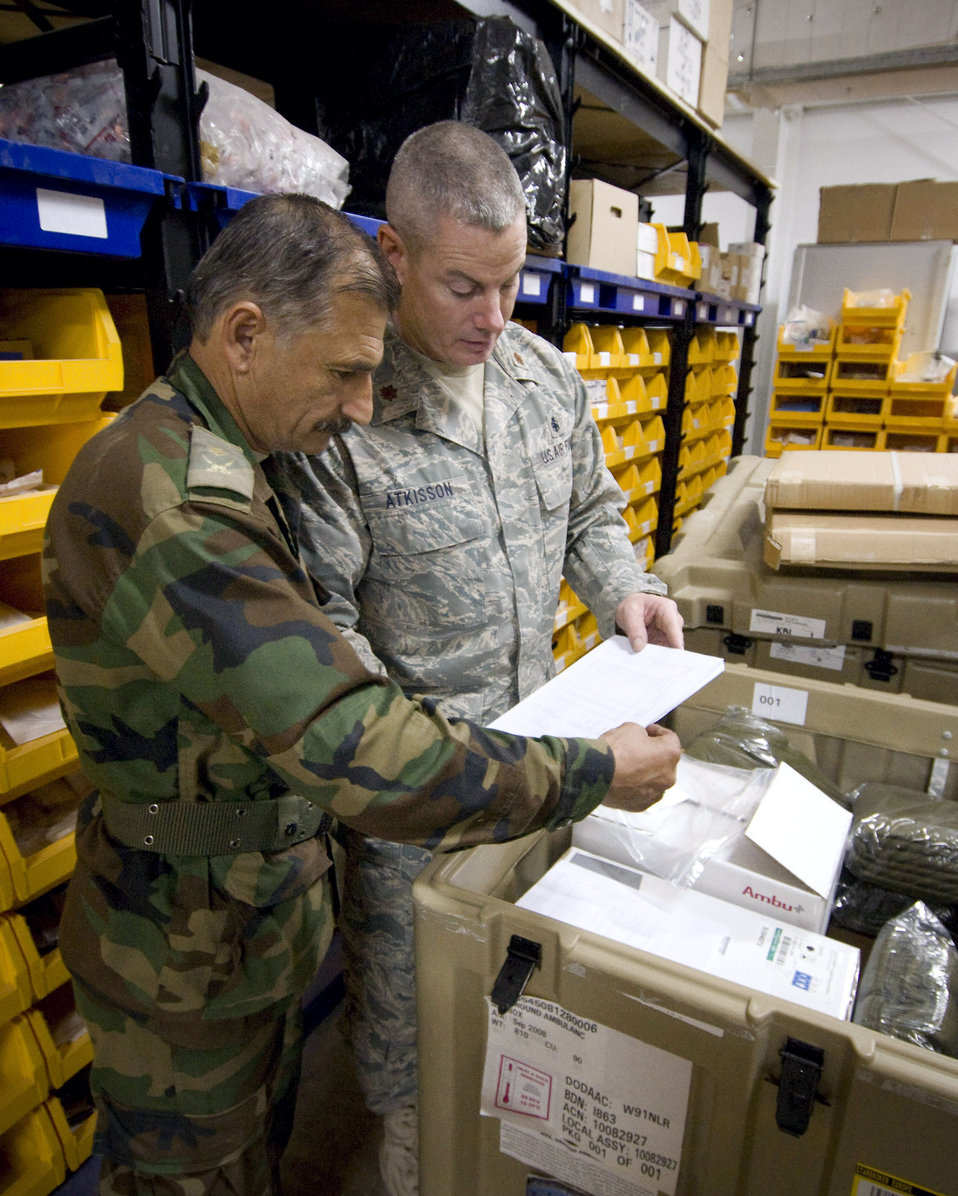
Airmen help build Afghan military medical capability

Maj. Jeff Atkisson reviews inventory with an Afghan national army officer Oct. 27 at the Kandahar Regional Military Hospital in Afghanistan. In addition to mentoring the ANA in the quality of healthcare, mentors are working to improve the medical supply chain in the country. Major Atkisson is a medical logistics mentor for 205th Afghan Regional Security Integration Command embedded training team.